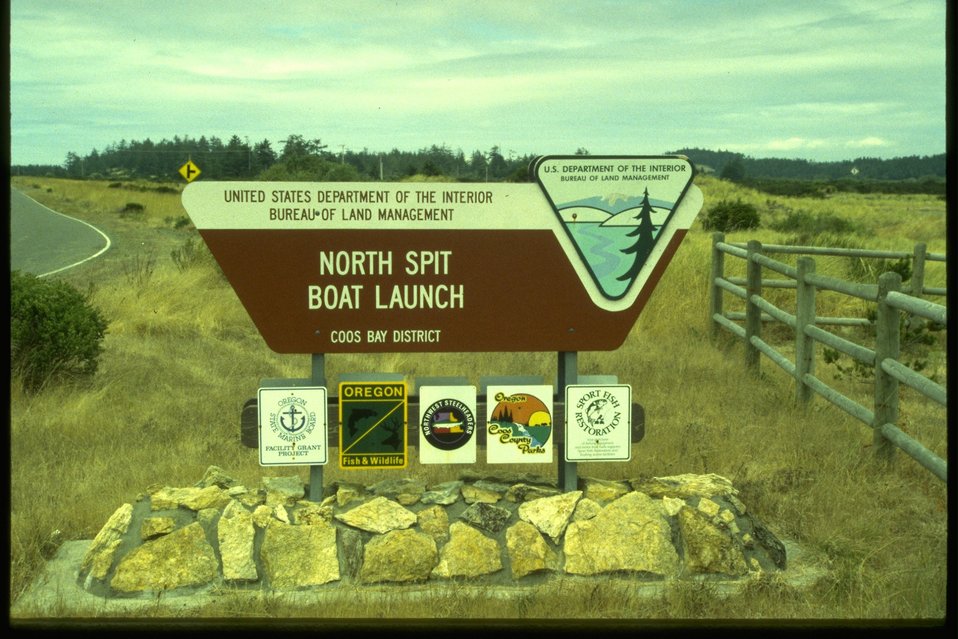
North Spit Boat Launch sign.